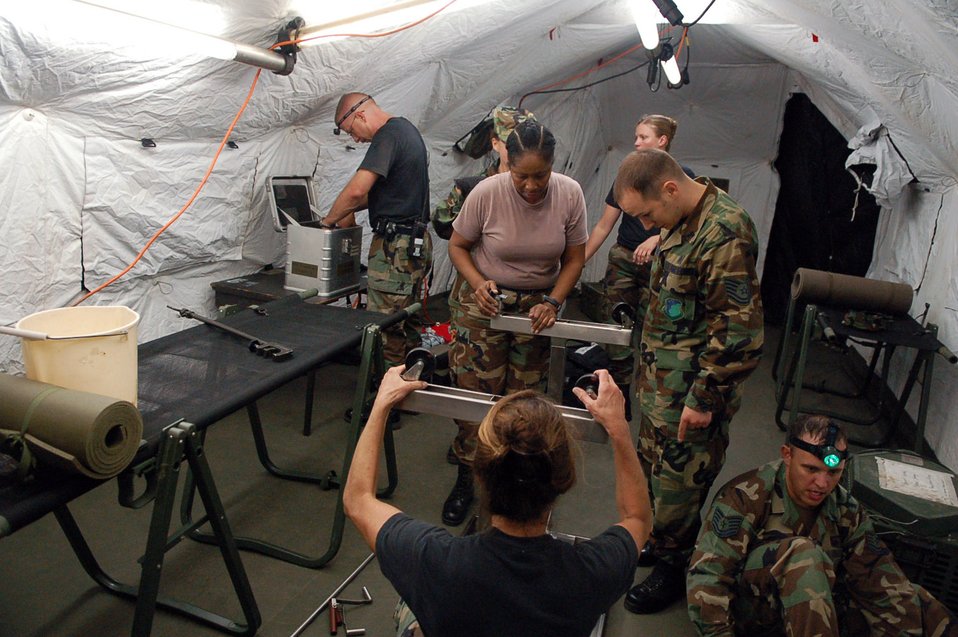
Mobile surgical team trains under cover of darkness

Members of the Joint Task Force-Bravo Medical Element work together to set up a mobile surgical team tent in an empty field at Soto Cano Air Base, Honduras, Oct. 18. The team built the mobile operating room at night to practice setting up in limited visibility.